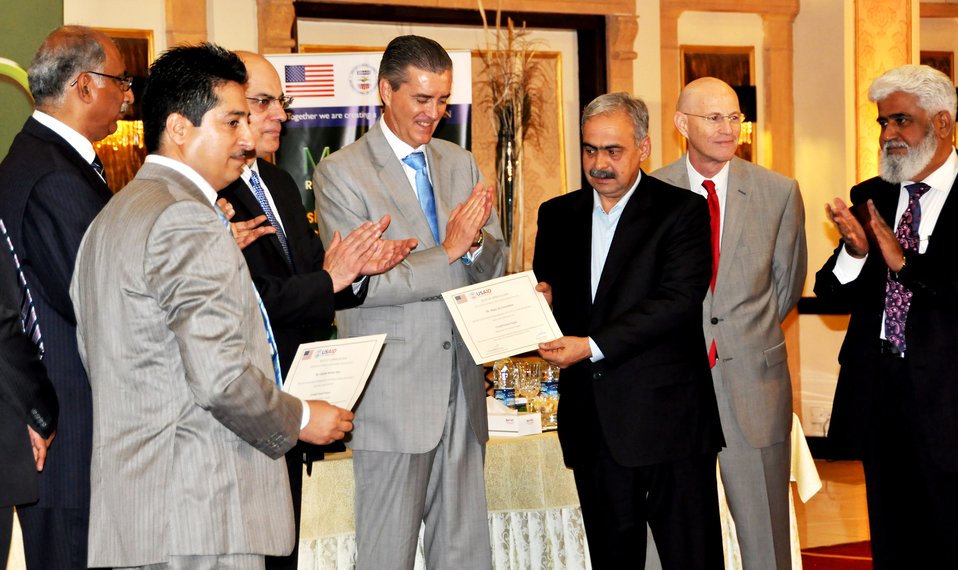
Mango Conference

Ambassador Olson and Commerce Secretary Qasim Niaz while distributing certificates to the project beneficiaries